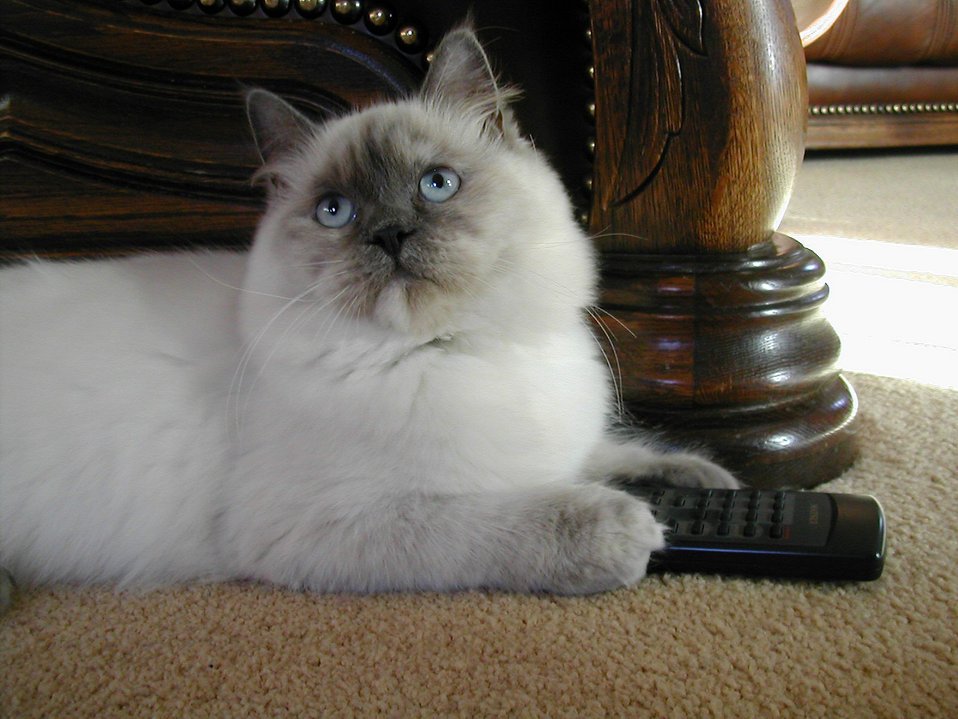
'Mindy'; Ragdoll lilac tortie-point